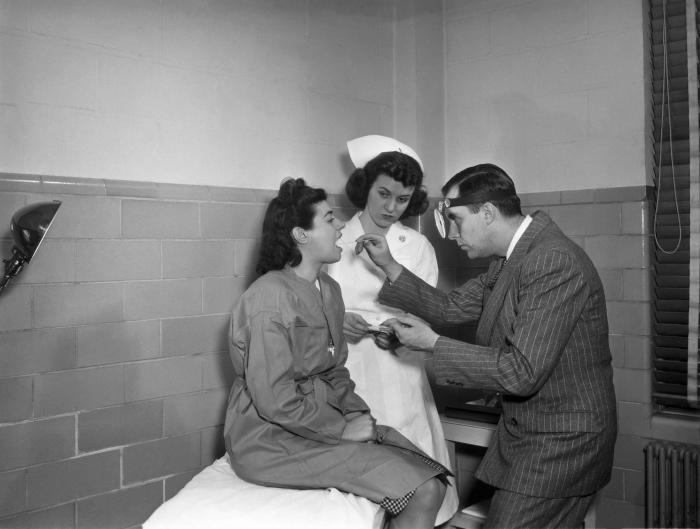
This 1950s historical photograph was provided by the Center for Disease Control's (CDC), National Institute for Occupational Safety and Health (NIOSH). It depicted an industrial plant physician and nurse, as they were examining a female industrial plant worker.